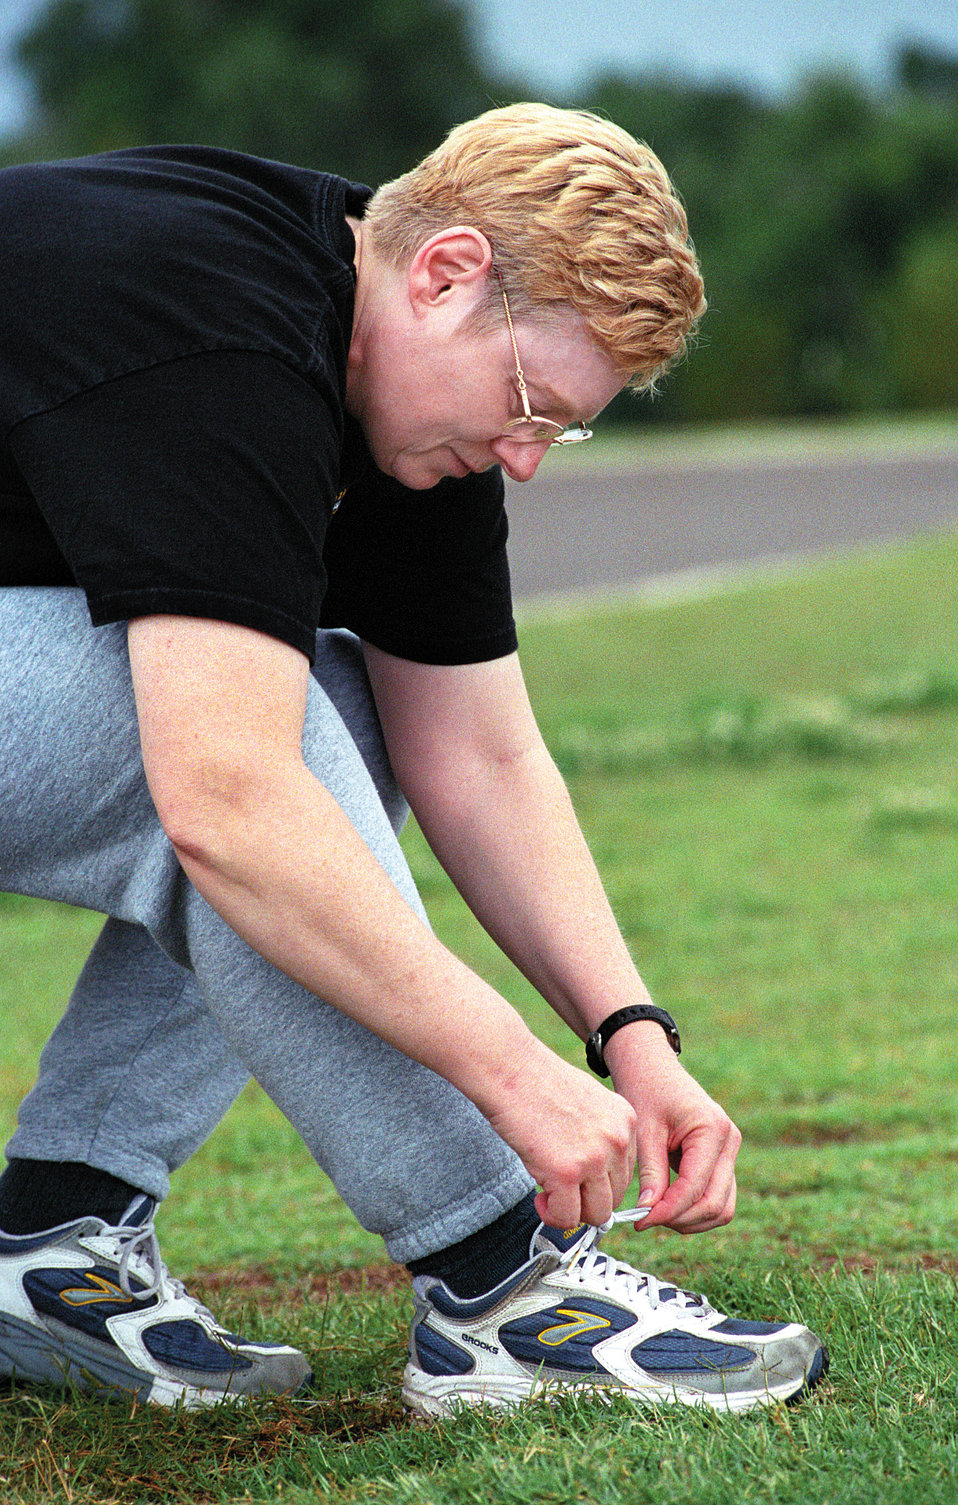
Major proves age, injury no obstacles to fitness

TINKER AIR FORCE BASE, Okla. -- Maj. Jeanne Frazier ties her shoe before a run here. Three months before her physical-fitness test, the major could not run well. Now, she is a squadron fitness leader, earned high marks on her fitness test and is enthused about making fitness enjoyable for others.